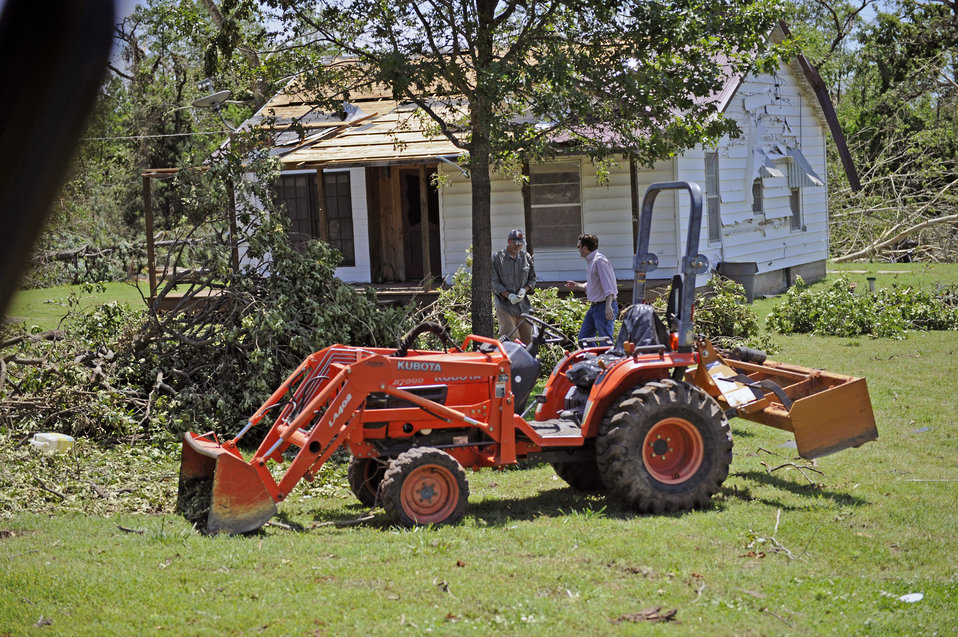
U.S. Department of Agriculture (USDA) Rural Development (RD) Okalahoma State Director Ryan McMullen delivers refreshments to tornado victims in Oklahoma.